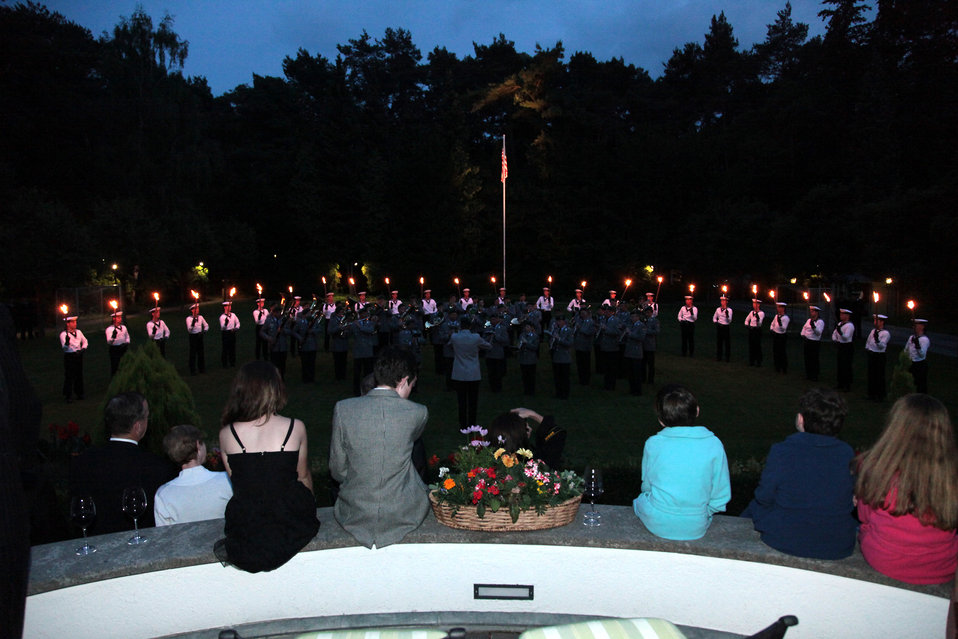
Joint Chiefs of Staff Mullen is Suprised With a Concert in Ambassador Murphy's Residence

The Bundeswehr honors Admiral Mike Mullen, Chairman of the Joint Chiefs of Staff, visit with a surprise concert in the garden at U.S. Ambassador to Germany Philip D. Murphy’s residence after a dinner also held in the Admiral's honor in Berlin, Germany, on June 9, 2011.